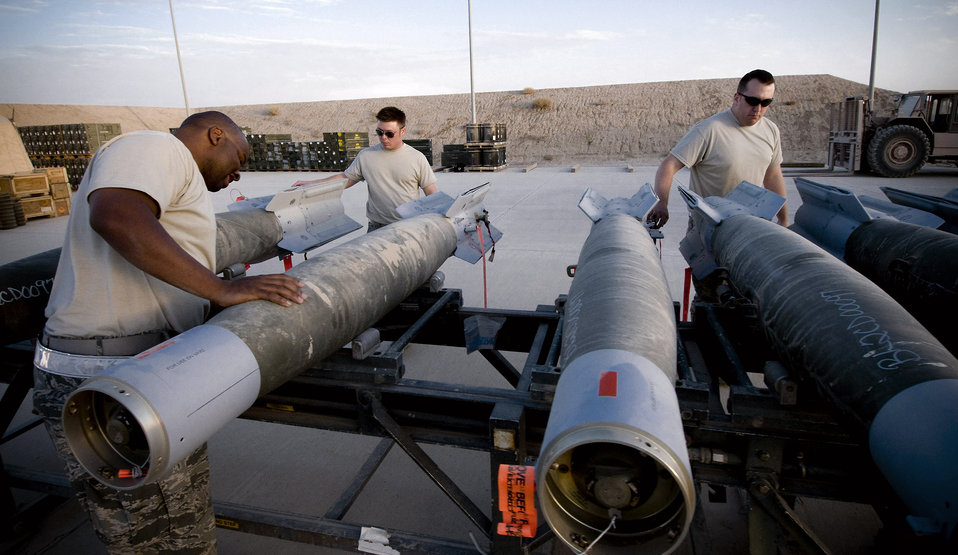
Kandahar team provides ammunition to win the fight

Airmen of the 451st Air Expeditionary Group Logistics Flight-Ammo checks guided bomb unit-12 laser-guided bombs Oct. 27 at Kandahar Airfield, Afghanistan. The three-man team frequently handles munitions separately, but some tasks require all three Airmen to work together to get the job done.